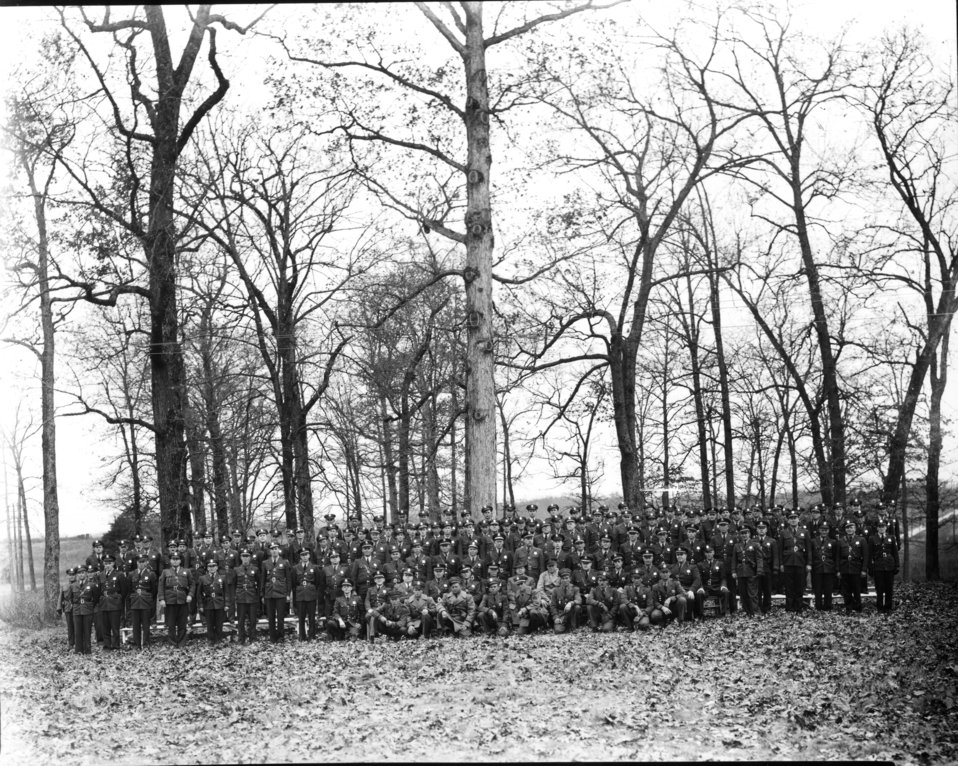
Security at Oak Ridge